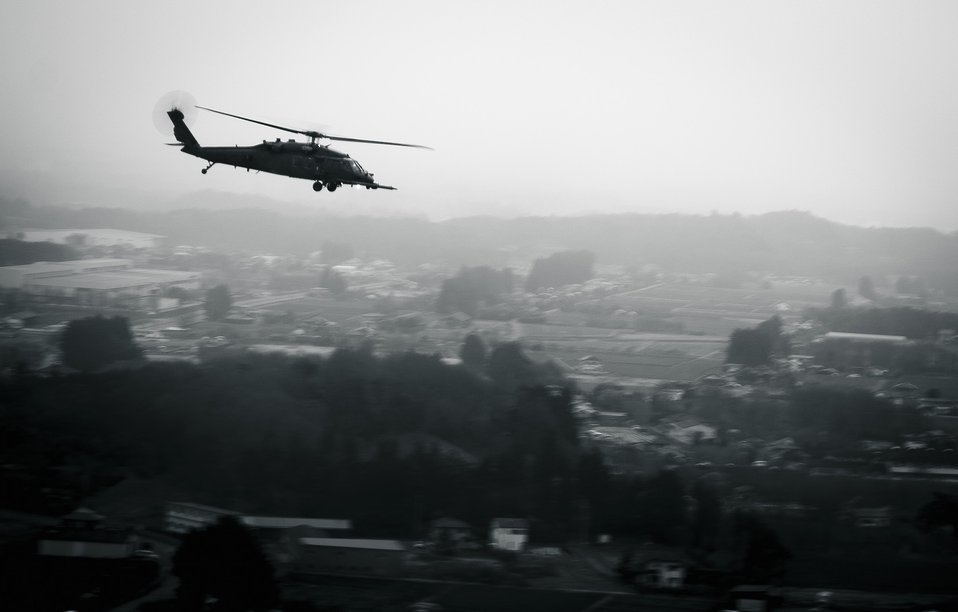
Scoping it out

An HH-60G Pave Hawk carrying members of the 320th Special Tactics Squadron at Kadena Air Base, Japan, flies over the Japanese countryside March 15, 2011.